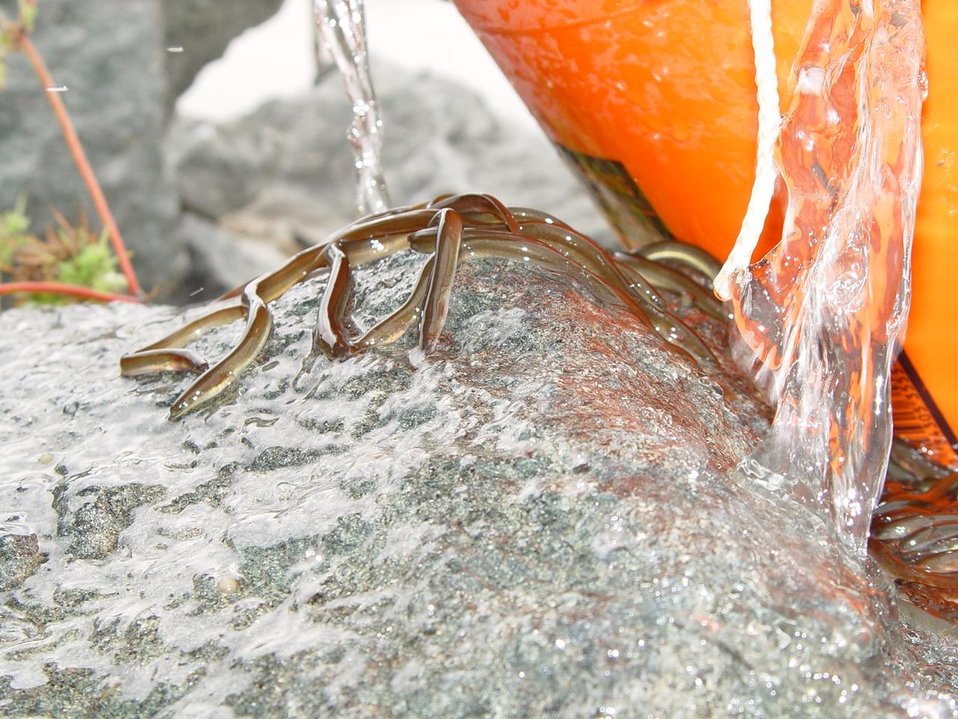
American eel

Elvers climbing to base of Conowingo Dam on the Susquehanna River. Elvers are juvenile eels that migrate to brackish waters and begin to develop gray to greenish-brown pigmentation.